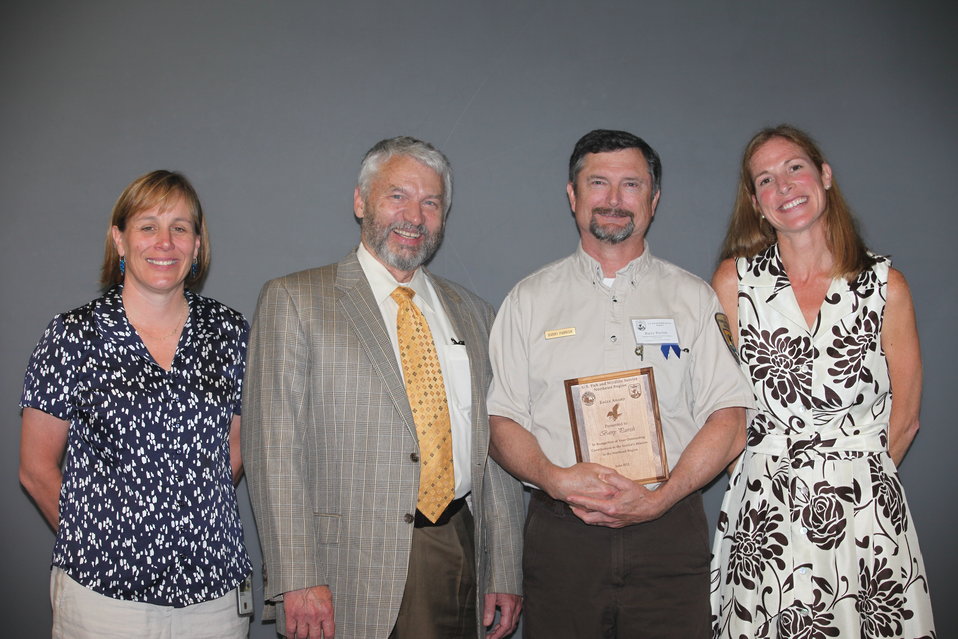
Barry Parrish, Silvio O. Conte National Fish and Wildlife Refuge recieved the Eagle Award.
From left to right: Deputy Regional Director Deb Rocque, Deputy Director Rowan Gould, Barry Parrish, and Regional Director Wendi Weber